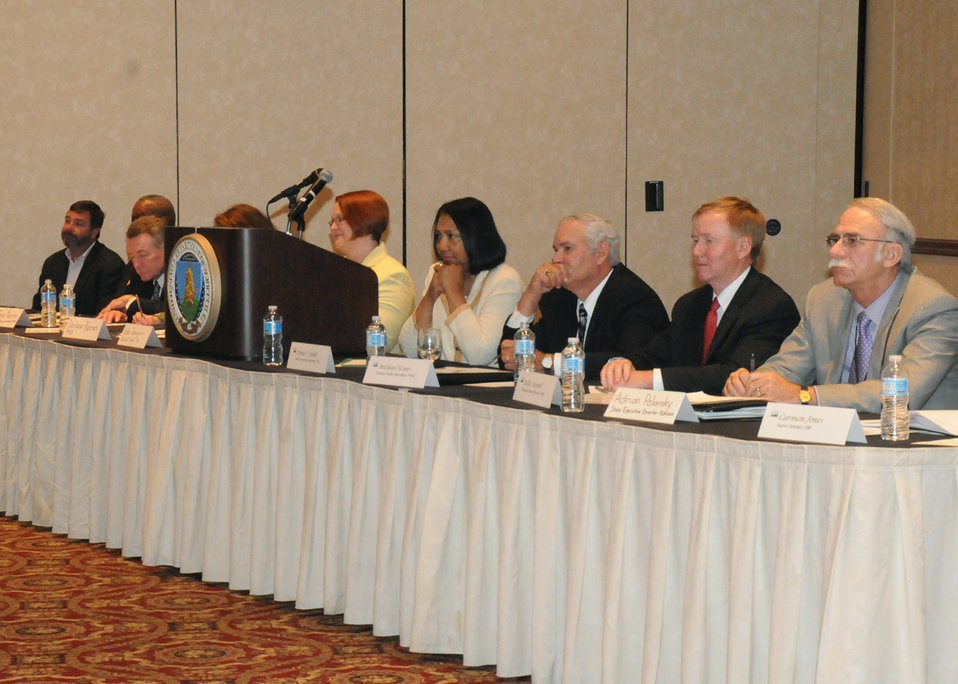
Panel of U.S. Department Agriculture officials at the Cultural Transformation employee listening session held in Kansas City, MO, on Wednesday, Apr. 14, 2010. (Seated L to R Chief Information Officer Chris Smith, Deputy Administrator for Commodity Programs James Monahan, Chief of Staff for Department Management Bobbie Jeanquart, Deputy Assistant Secretary for Department Management Alma Hobbs, Deputy Under Secretary for Farm and Foreign Agricultural Service Michael Scuse, State Executive Director Farm Service Agency Eddie Hamill, and State Executive Director Kansas Adrian Polansky) USDA photo 10di1309-127.